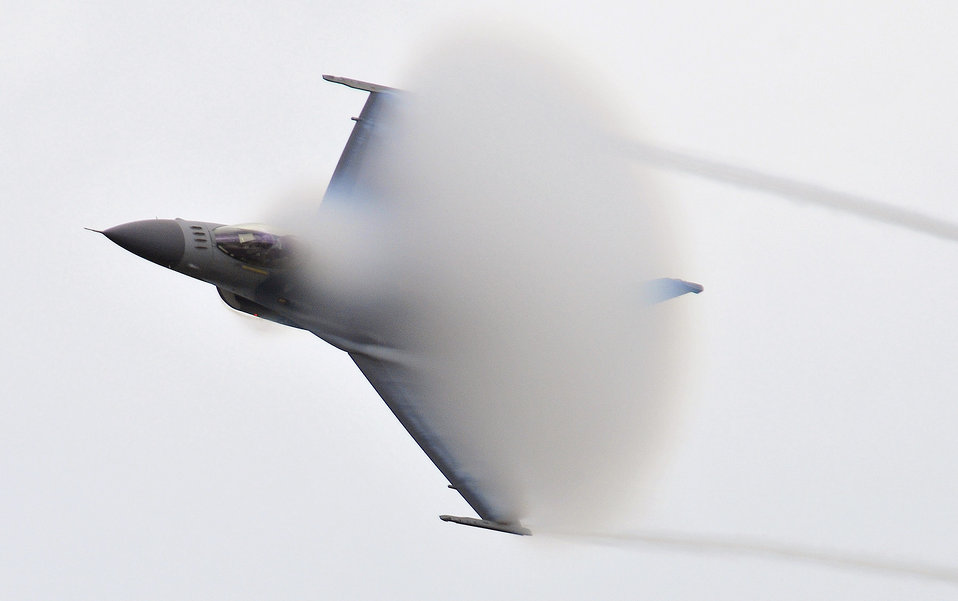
Approaching the sound barrier

An F-16 Fighting Falcon pilot with the Viper East Demonstration Team from Shaw Air Force Base, S.C., creates a "cone" of condensation Aug. 21, 2010, as he nears Mach 1 during a flyby at an open house at Volk Field Air National Guard Base, Wis.